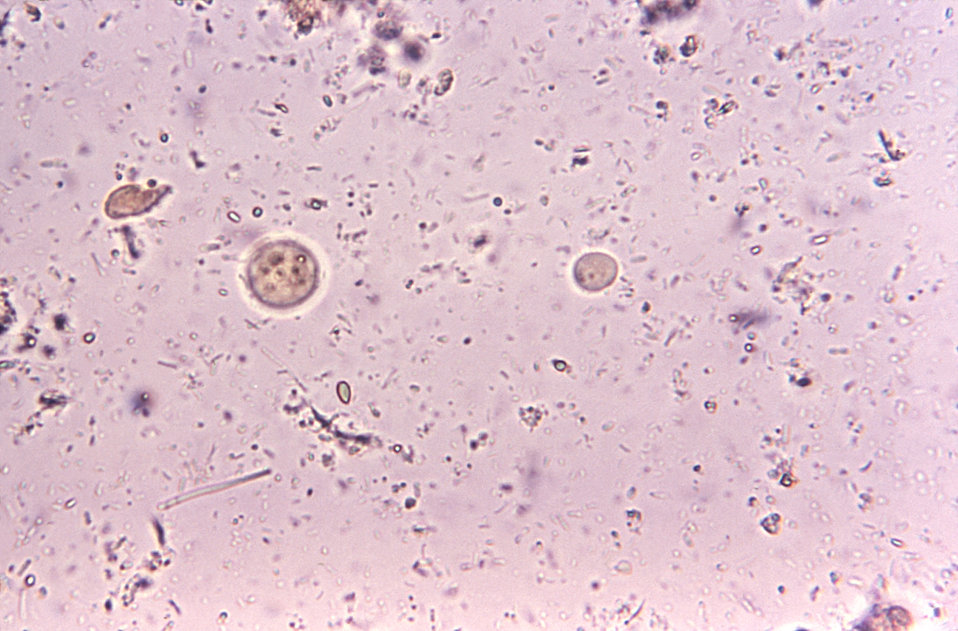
Magnified 500X, this direct mount, unstained photomicrograph revealed the presence of a cyst of the protozoan parasite, Entamoeba coli. This is one intestinal parasite, which lives as a commensal organism, existing harmlessly in the human digestive tract. Of importance, is the fact that this organism can often be confused with its pathogenic counterpart, E. histolytica.